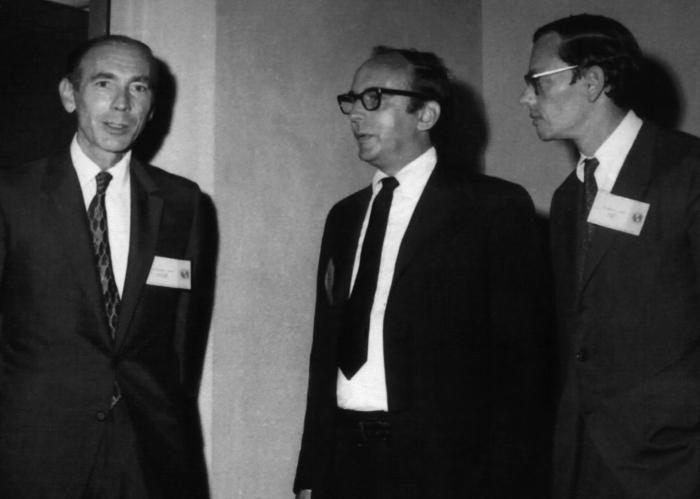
This 1975 photograph featured Dr. Geoffrey Jeffery (left), Malaria expert of the National Institutes of Health (NIH) and the Centers for Disease Control, former CDC Director, Dr. David J. Sencer (middle), and Dr. Robert Kaiser (right), former Chief of the CDC's Malaria Branch in the Division for Parasitic Diseases (DPD).